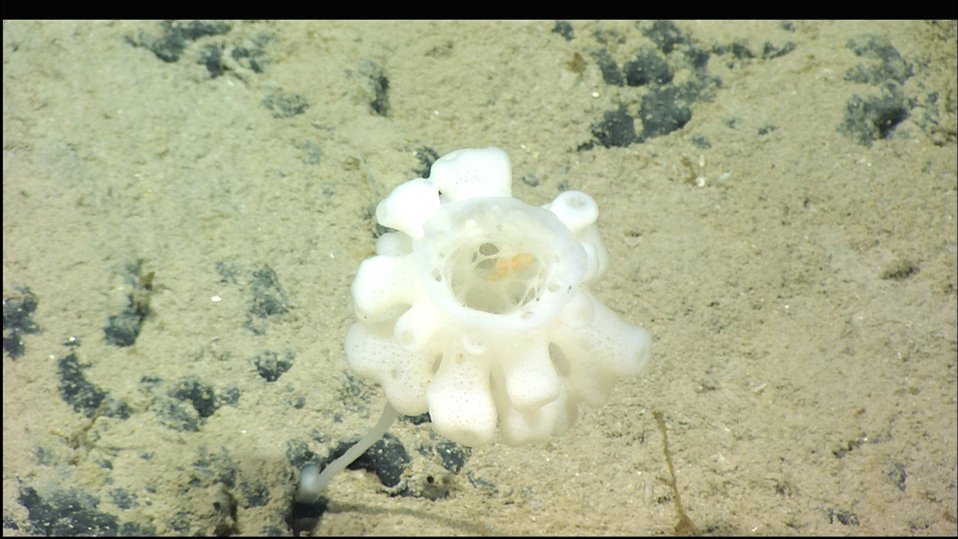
A glass sponge, referred to as a 'goblet sponge on a stick' by the science party on board.